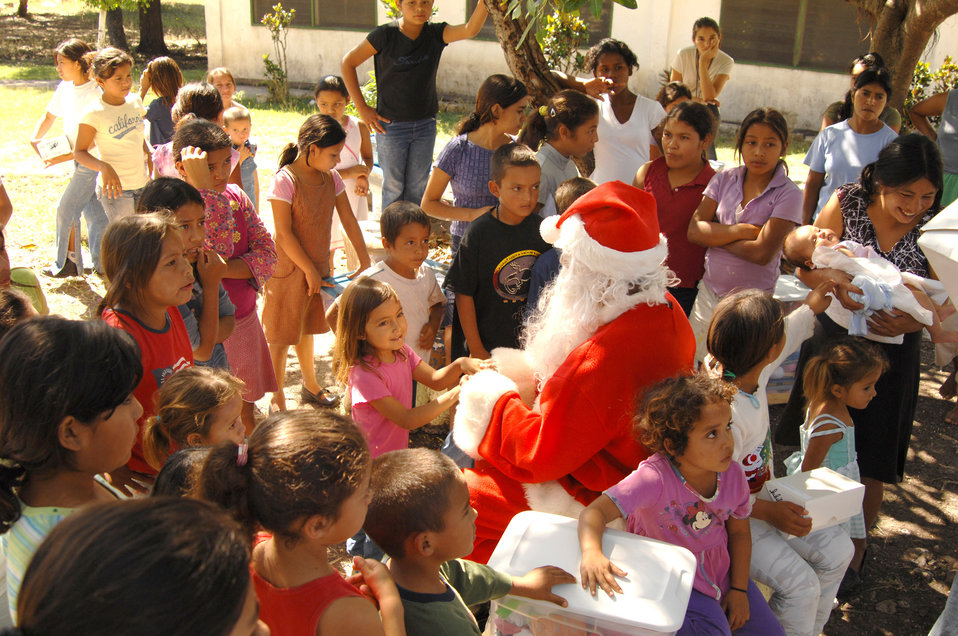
Santa pays an early visit

Children gather around Santa Claus at the Hogar San Antonio de Padua Orphanage in Comayagua, Honduras. Operation Christmas Wish is an annual trip made by Airmen from the 1st Special Operations Wing who deliver more than 9,000 lbs of Christmas packages to hundreds of Honduran orphans. Santa is Tech. Sgt. Norman Padilla Cruz from the 1st Special Operations Aeromedical Squadron.